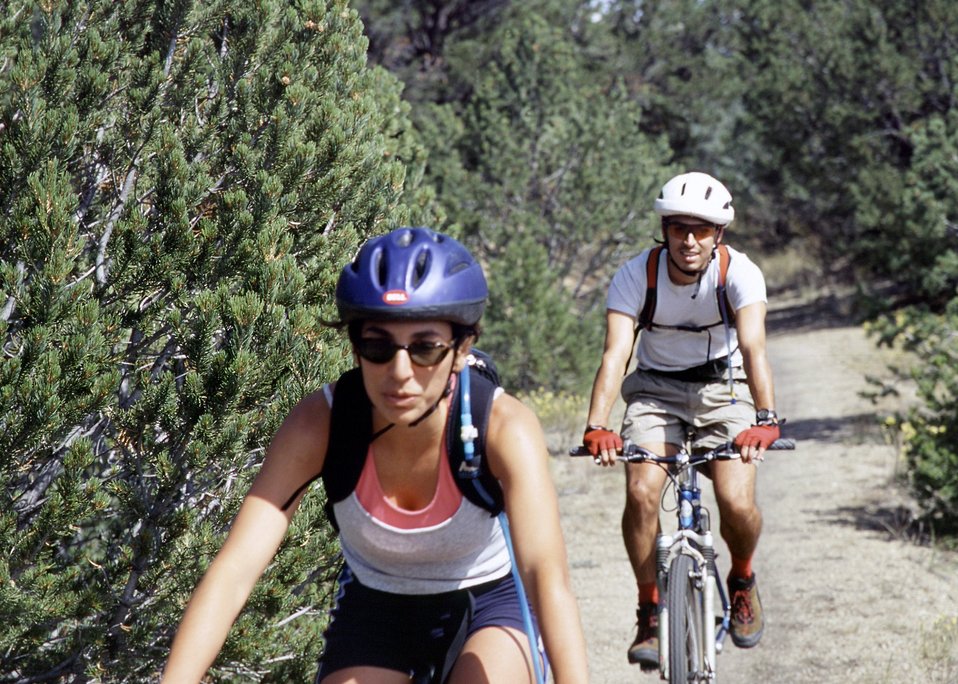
Mountain Bikers